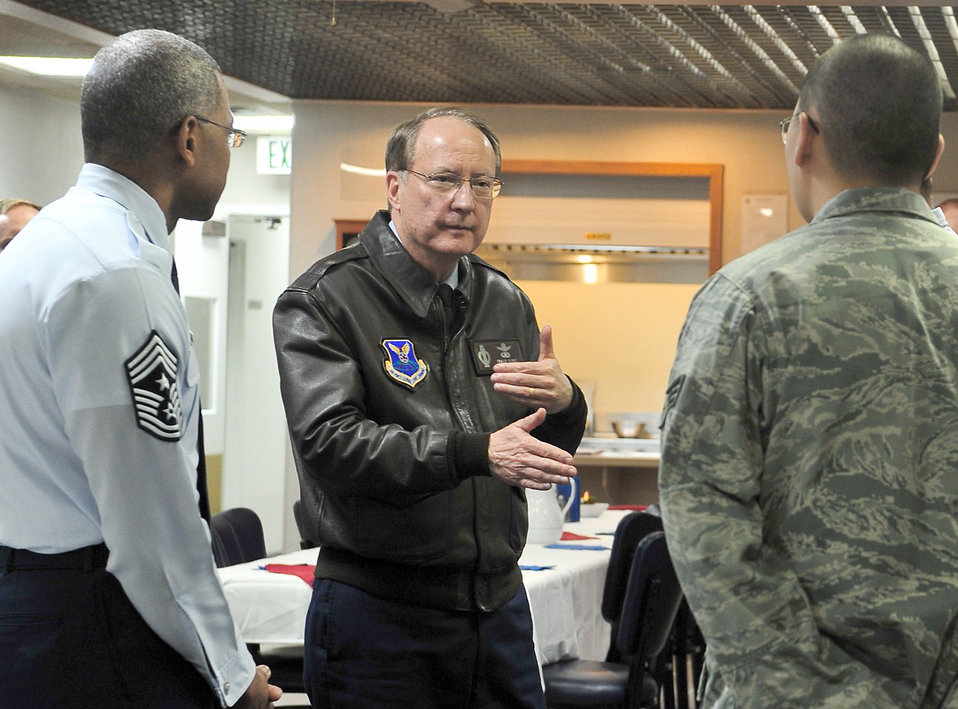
Global Strike Commander: Minot's Airmen are what make the difference

Air Force Global Strike Command Commander Lt. Gen. Frank Klotz, and Command Chief Master Sgt. Jack Johnson speak with Airmen from the 791st Missile Security Forces Squadron Dec. 13, 2010, during a missile alert facility tour at Minot Air Force Base, N.D. General Klotz visited with Minot AFB Airmen to show his appreciation for their hard work and dedication to the nuclear enterprise.